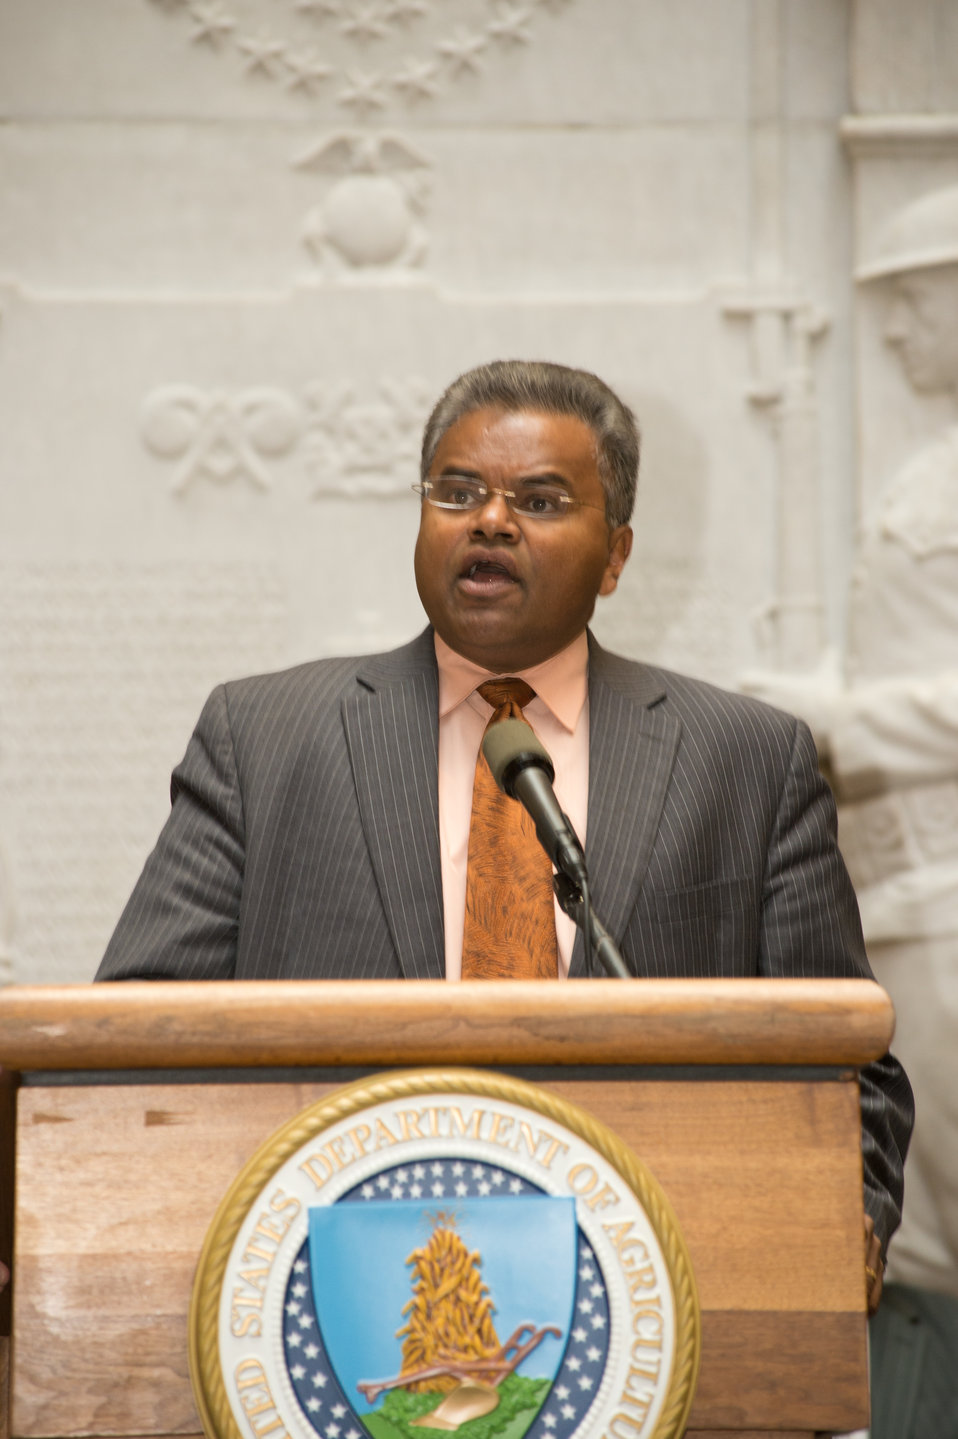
Mathy Stanislaus, Assistant Administrator for the Office of Solid Waste and Emergency Response addresses employees and partner agencies at the United States Department of Agriculture (USDA), Feds Feed Families closing ceremony, on Wed., Nov. 13, 2013 in Washington, D.C. Federal employees nationwide stepped up the challenge of Feds Feed Families and gathered 9 million pounds of food for food banks across the nation and the National Capital Region for families in need setting an all time record high.